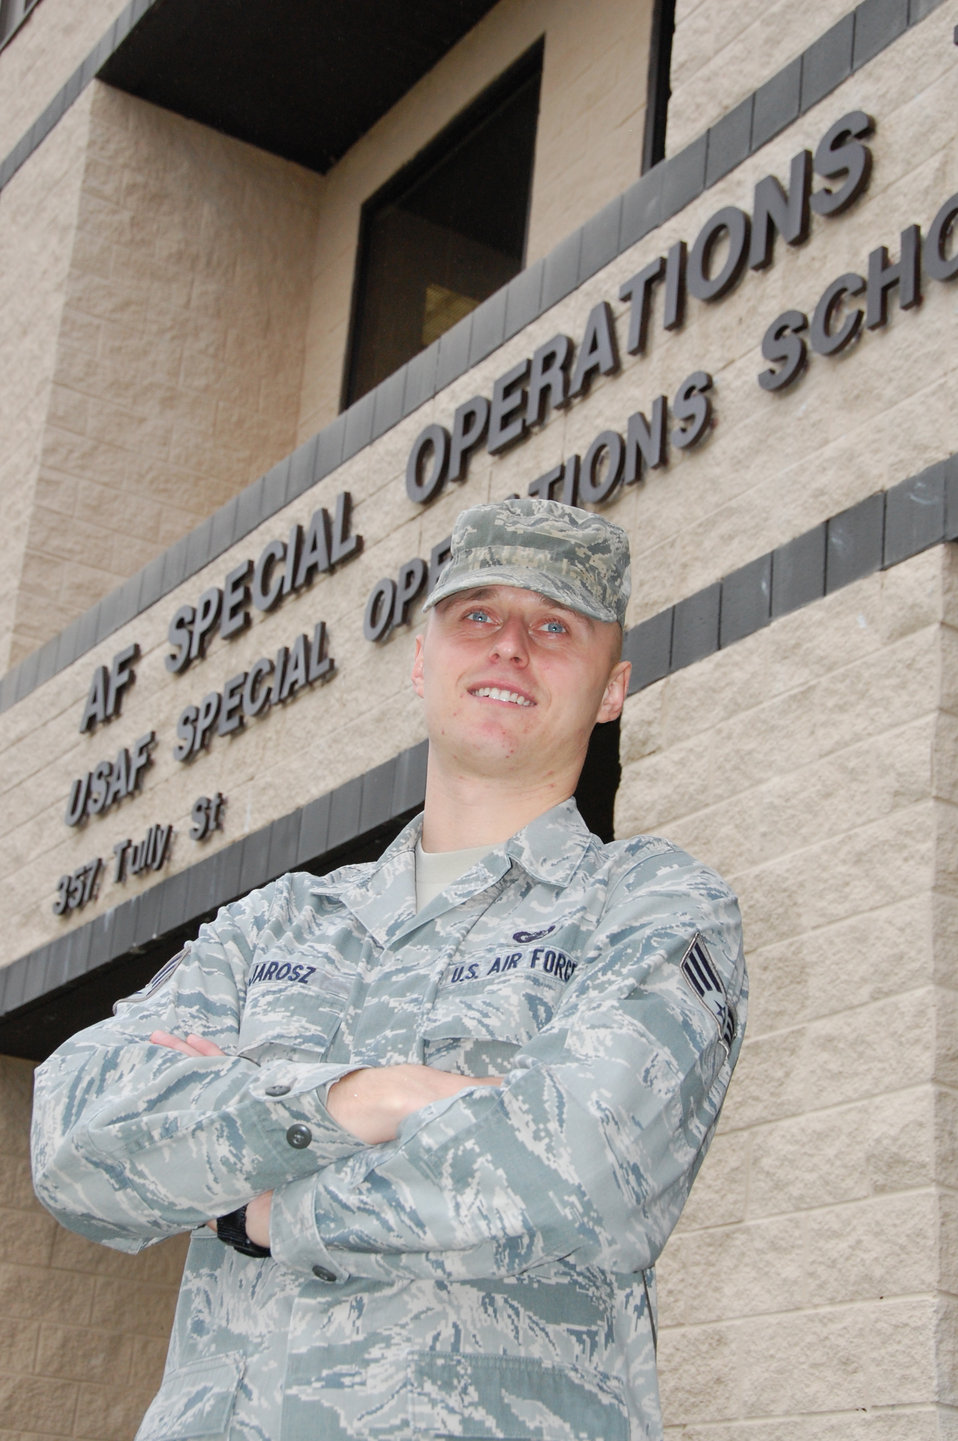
Senior Airman Pawel Jarosz enlisted in the Air Force through the Military Accessions Vital to National Interest program. The program allows legal noncitizens with certain skillsets to enlist and receive their citizenship. Pawel, who was born in Poland, is now an adviser at the U.S. Air Force Special Operations School at Hurlburt Field, Fla.